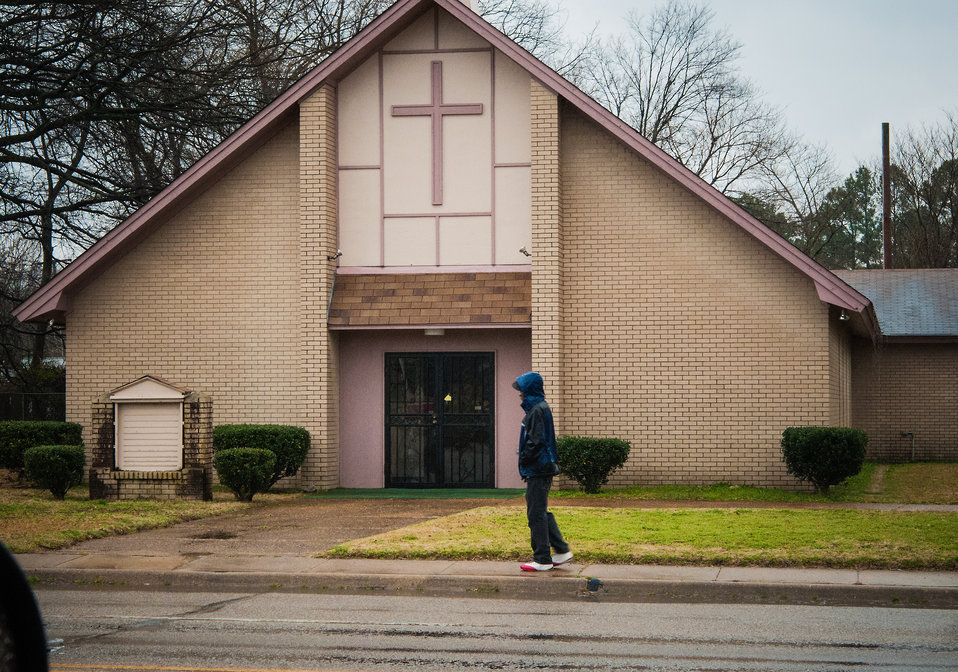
A resident walks pass a church in Forest City, AR on Mar. 5, 2013. The U.S. Department of Agriculture in partnership with Heifer International (an International organization whose mission is to work with communities to end hunger and poverty and care for the Earth) and various for-profit and non-profit organizations have put in motion the “Seeds of Change Implementation” Plan to use sustainable agriculture to build food systems in the Arkansas Delta. The program has evolved into the Arkansas Delta Seeds of Change (ADSOC) Initiative. The East Arkansas Enterprise Community, Inc. in Forrest City, AR is one of 42 community-based organizations located in high poverty areas in the United States to benefit from the Arkansas Delta Seeds of Change Initiative.